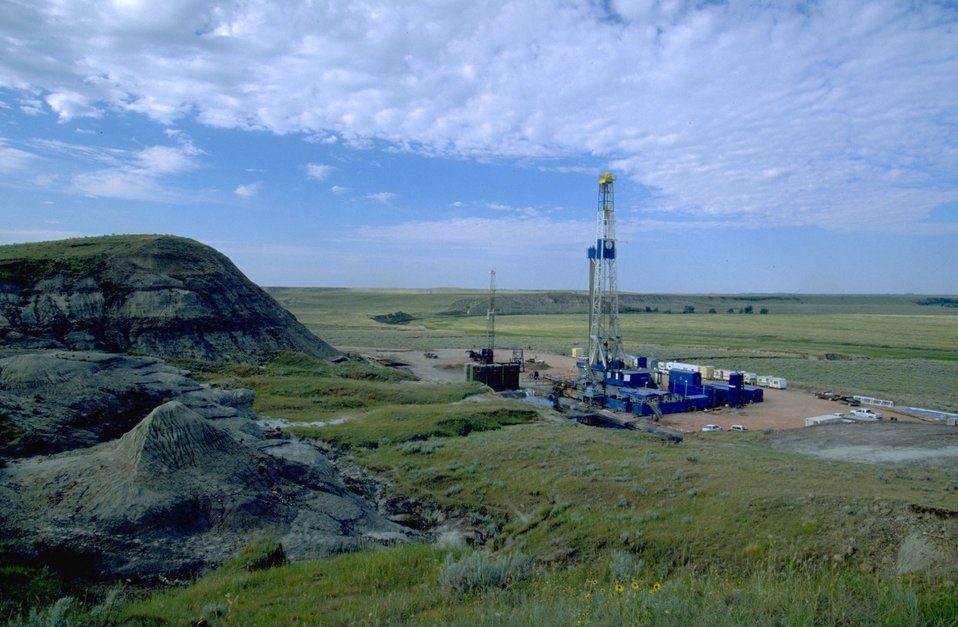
Oil drilling rig and workover rig on a single pad